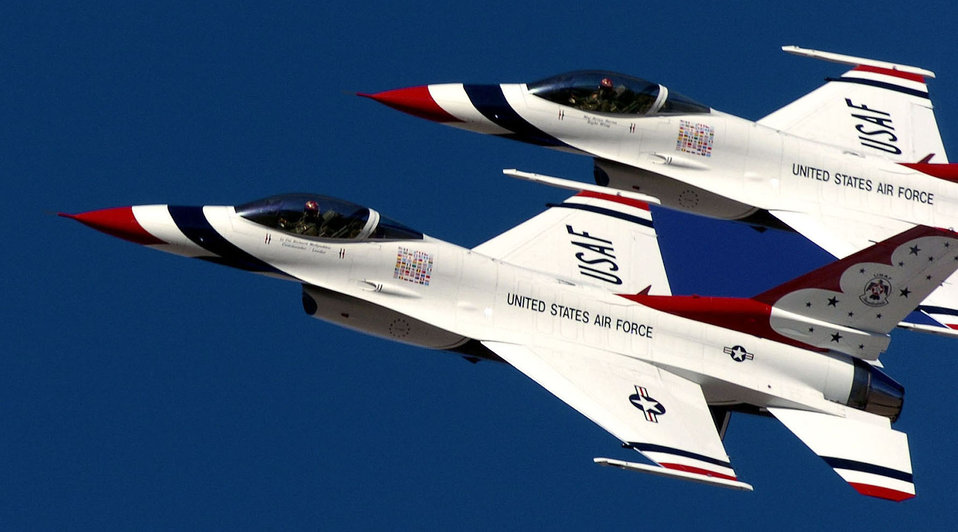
Practice, practice, practice

INDIAN SPRINGS, Nev. -- A Thunderbird formation makes a pass here Feb. 6. The United States Air Force Air Demonstation Squadron practices from November through March preparing for the upcoming show season.